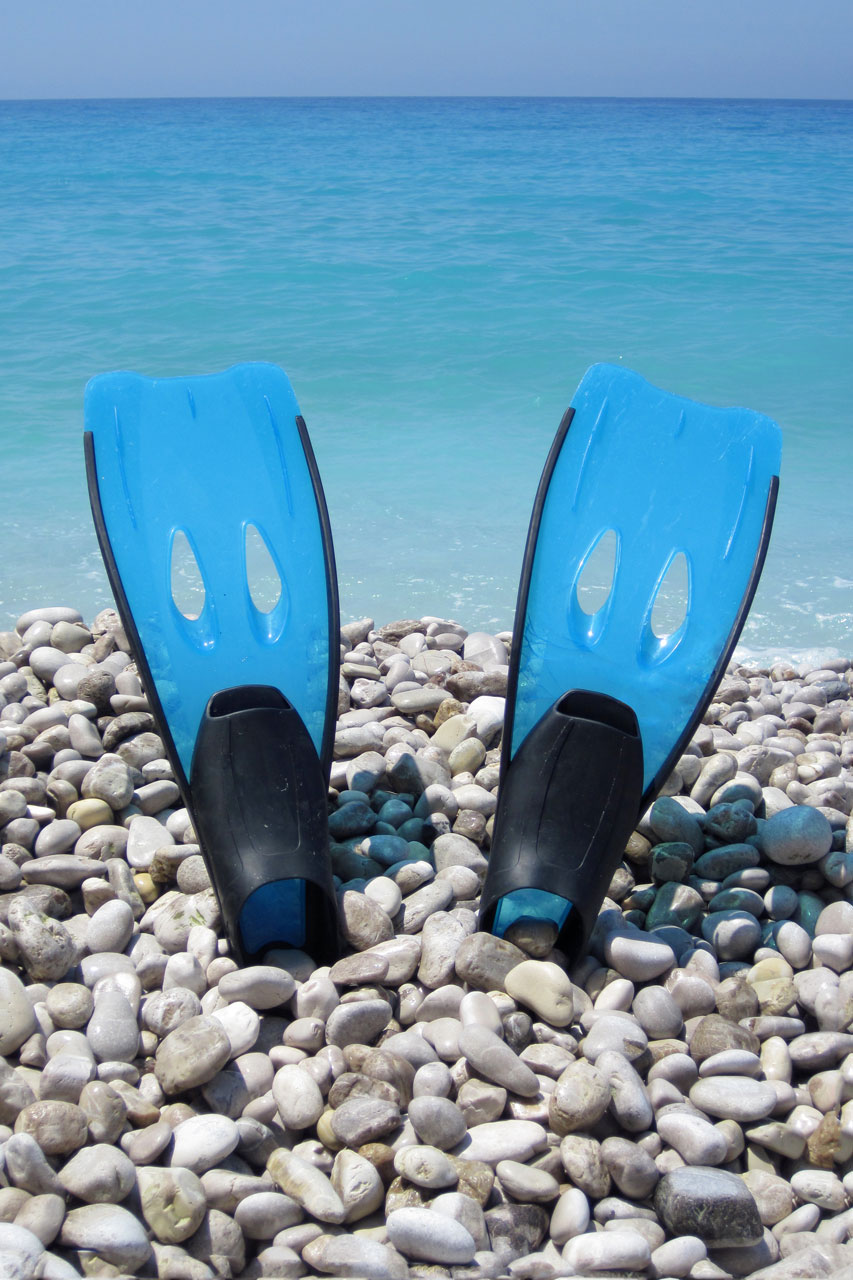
Flippers beach and ocean

Blue flippers on pebble beach with blue ocean in the background.